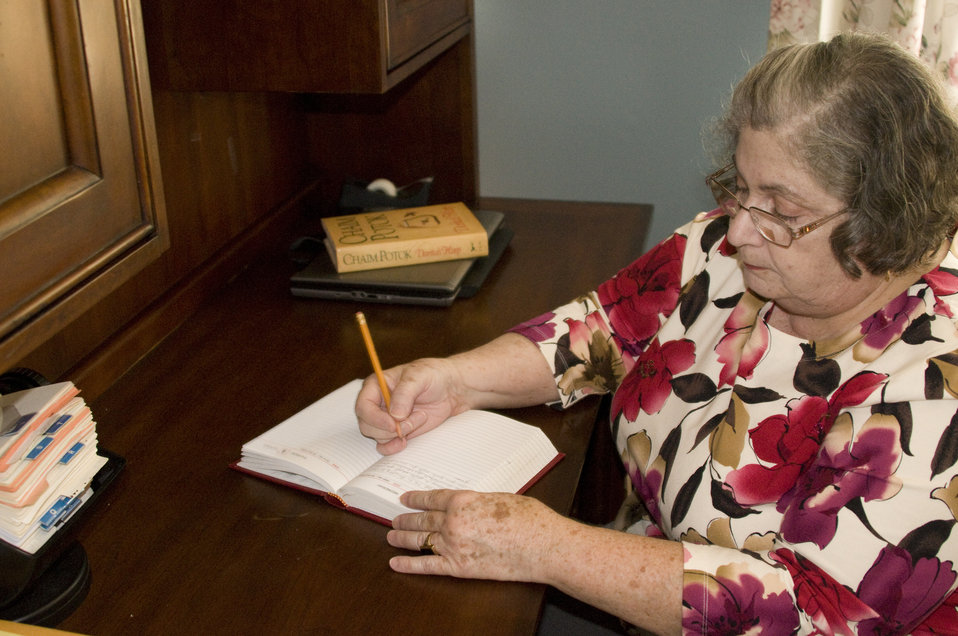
Seated at her in-home desk after having picked up her mail from her street side mailbox, this woman, who is a rheumatoid arthritis patient, was making notations in what appeared to be a daily diary. Living with arthritis does not necessarily mean existing in a non-functional state, and keeping a record of your daily progress, helps not only the patient, but her physician track any progress, as well as any regression in her condition.